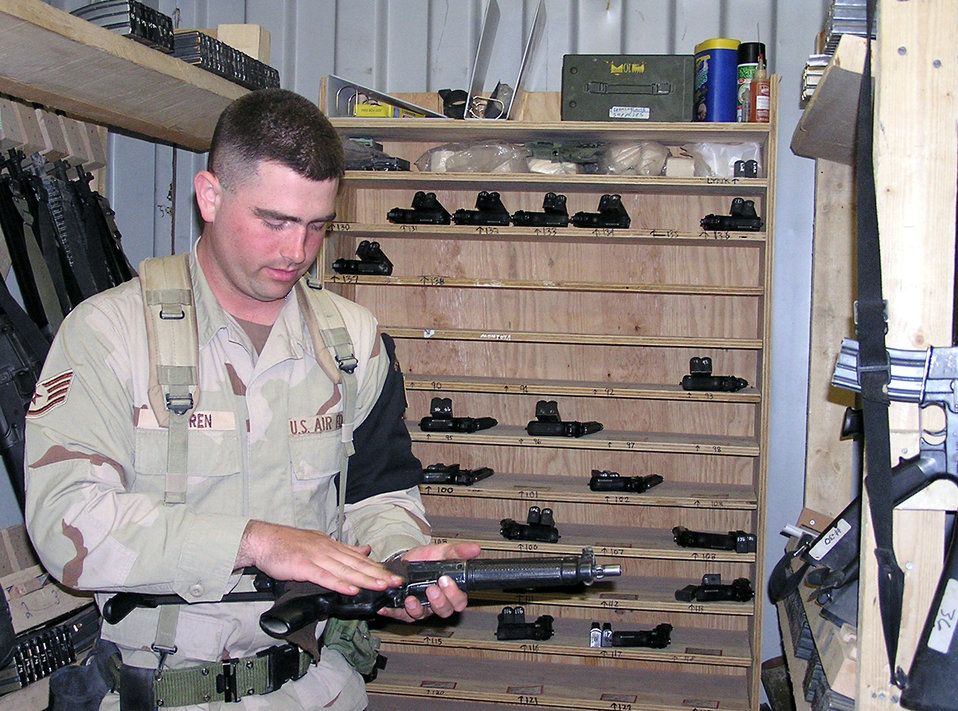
Escorts keep base safe

KIRKUK AIR BASE, Iraq -- Staff Sgt. Jerry Warren cleans off an MP-5 submachine gun before storing it in the escort armory here. The armory stores almost 200 weapons for escorts and other security personnel. Sergeant Warren is assigned to the 506th Air Expeditionary Group's escort flight and is deployed from Lackland Air Force Base, Texas.